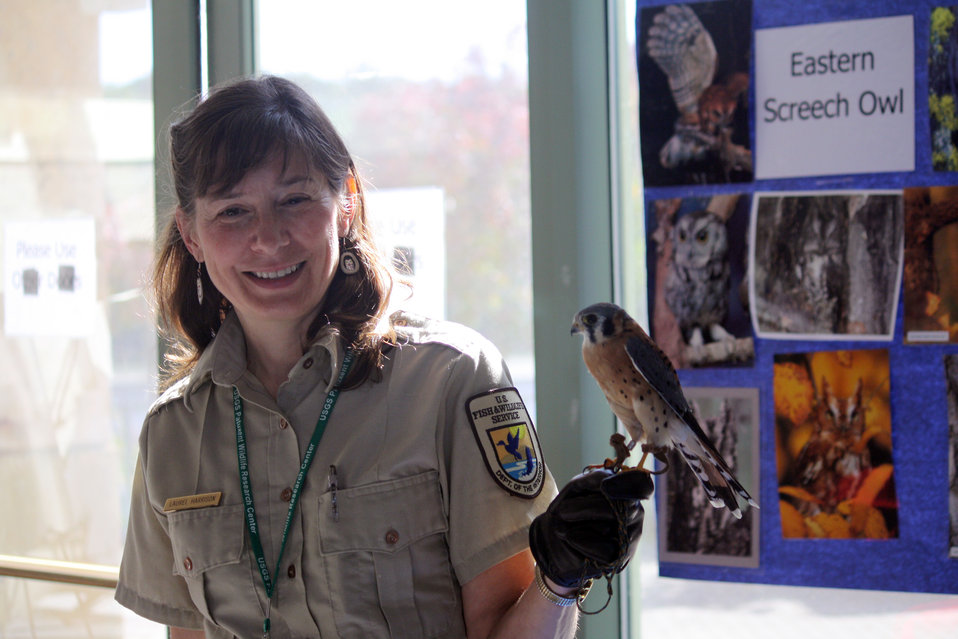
Patuxent Research Refuge 75th Anniversary

Refuge staff present an American kestrel at the Patuxent 75th Anniversary.